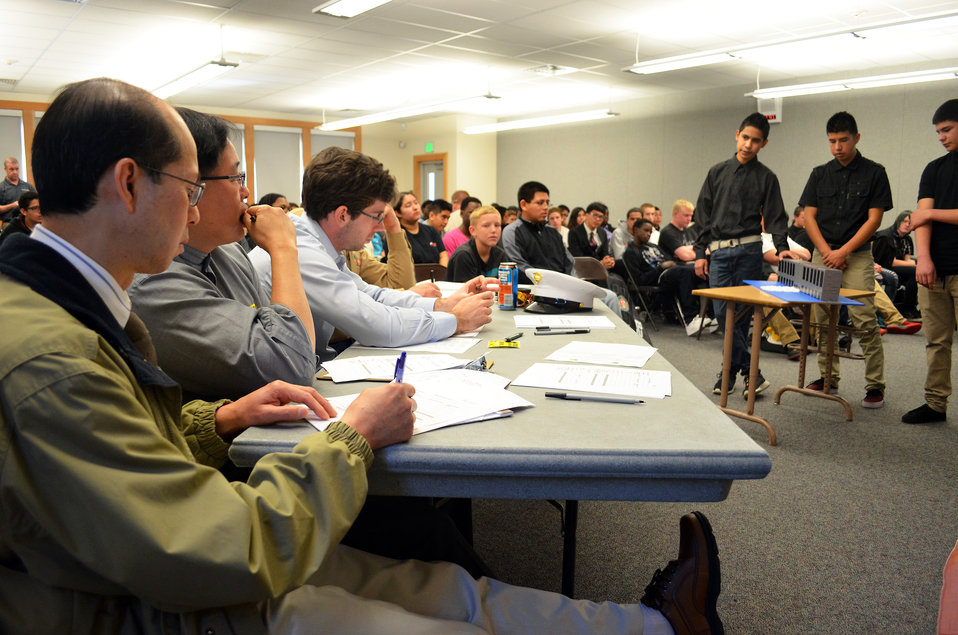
District Engineers judge students ‘Modern Marvels’ projects

Engineers from the U.S. Army Corps of Engineers Sacramento District (from left to right) Frank Lum, Alan Morita and Chris Bayliss judge a student project during the ‘Modern Marvels’ competition at Antioch High School in Antioch, Calif., Feb. 19, 2014.

The engineers used their varied fields of expertise – electrical, mechanical and structural – to help judge projects and guide students on future endeavors. The week-long student presentations included scaled models and slideshow presentations of significant engineering feats.